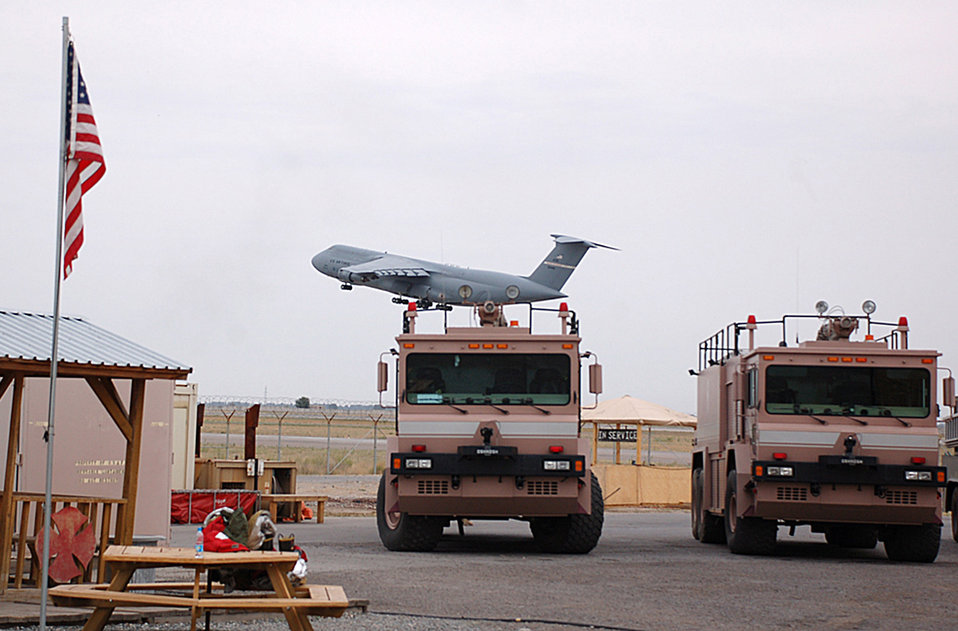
Airpower Summary for July 22, 2007

A C-5 Galaxy takes off from Manas Air Base, Kyrgyzstan, and heads down range with supplies and passengers to aid in combating the war on terrorism. Although there are no C-5s currently stationed in the area of responsibility, the aircraft occasionally brings large amounts of resupply goods to units throughout Southwest Asia.